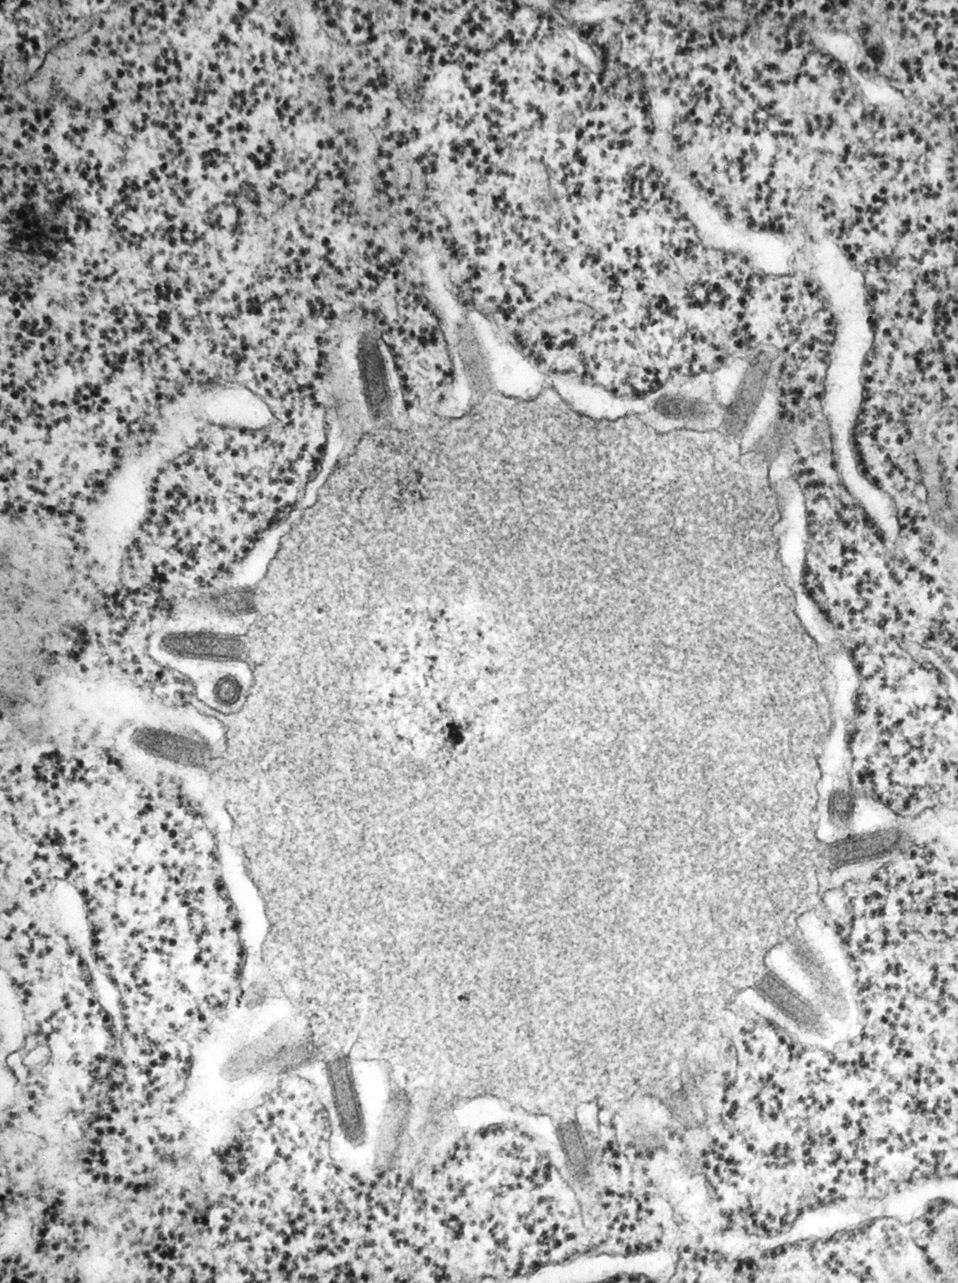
This transmission electron micrograph (TEM) revealed the presence of Lagos bat virus (LBV) virions, and an intracytoplasmic inclusion body in this tissue sample. LBV is a Rhabdoviridae family member, and a member of the genus, Lyssavirus.